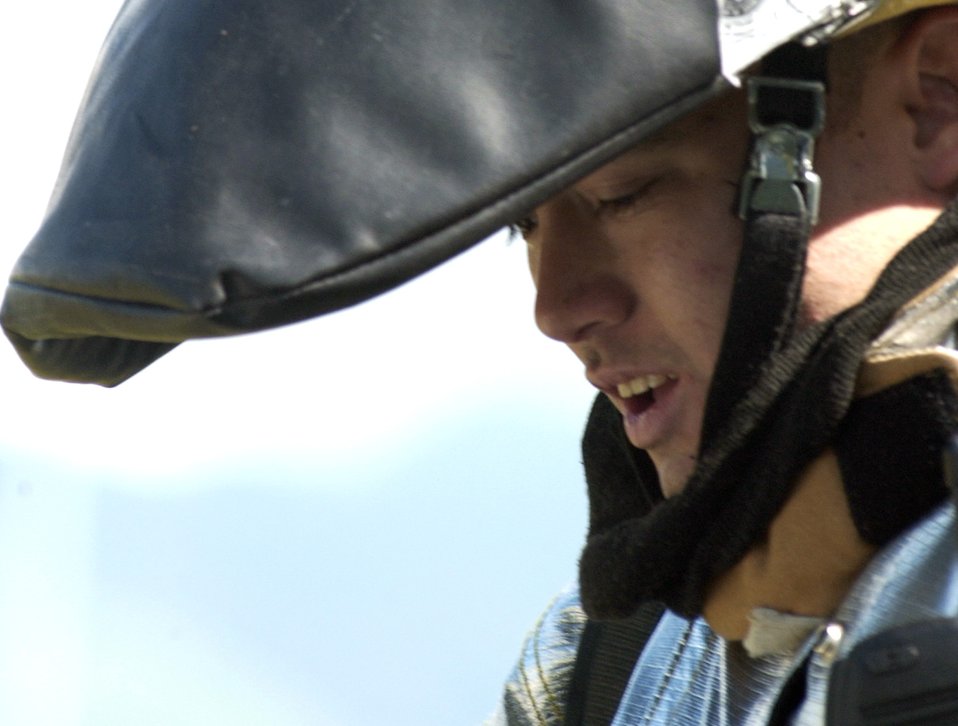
Exercise response

Staff Sgt. Keith Manibusan prepares to enter a building during a local Salty Nation exercise at Aviano AB, Italy on Tuesday, June 6, 2006. Sergeant Manibusan is with the 31st Fighter Wing.